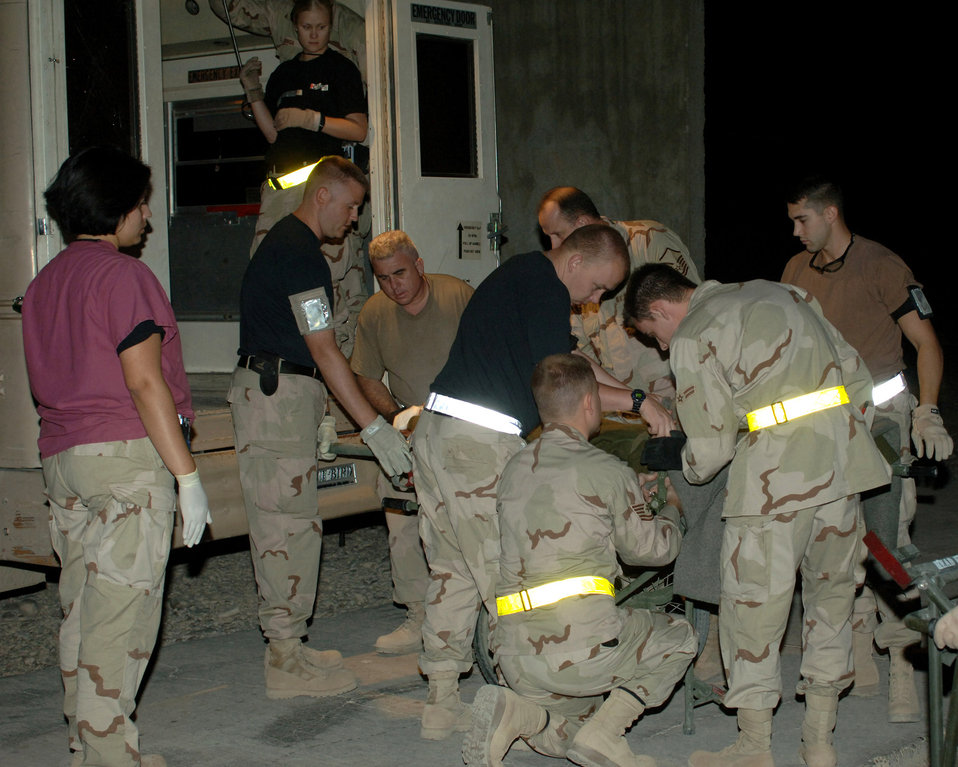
Air Force hospital saves Iraqi lives

BALAD AIR BASE, Iraq -- Air Force medics rush an injured Iraqi from an ambulance Sept. 29 after being caught in car bomb blasts that occurred earlier that day in the town of Balad near here. Patients were rushed here to the Air Force Theater Hospital following the attack.